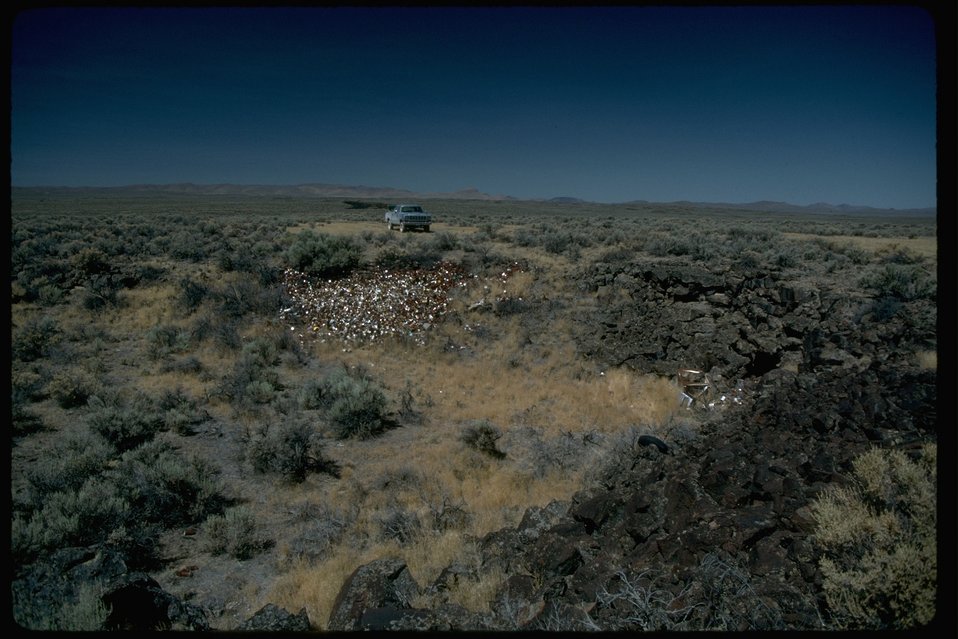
Illegal dump site in the Saddle Butte Wilderness Study Area. OR 3-111